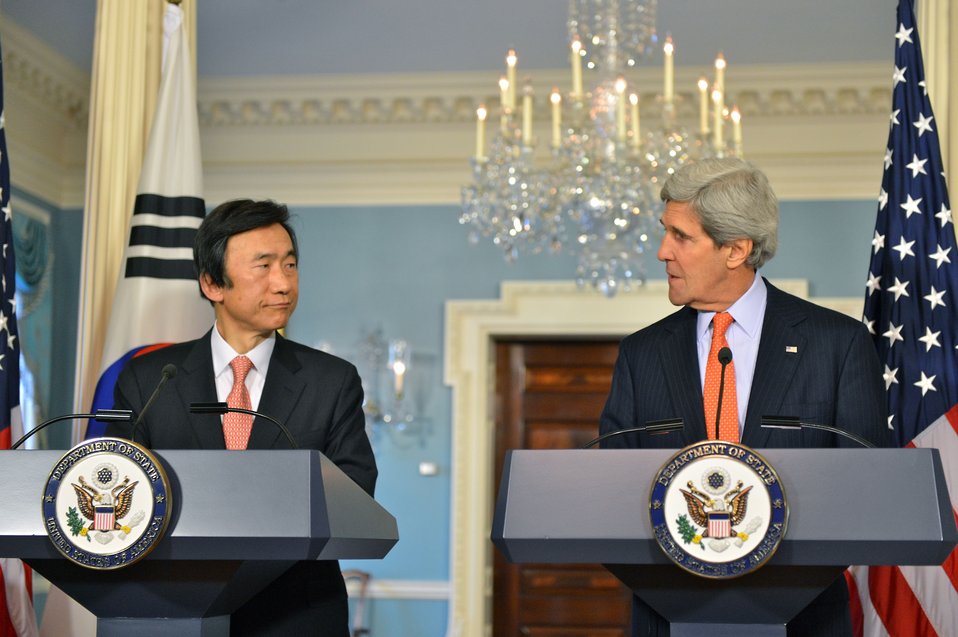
Secretary Kerry and Korean Foreign Minister Yun Byung-se Address Reporters

U.S. Secretary of State John Kerry and Korean Foreign Minister Yun Byung-se address reporters after their bilateral meeting at the U.S. Department of State in Washington, D.C., on January 7, 2013.